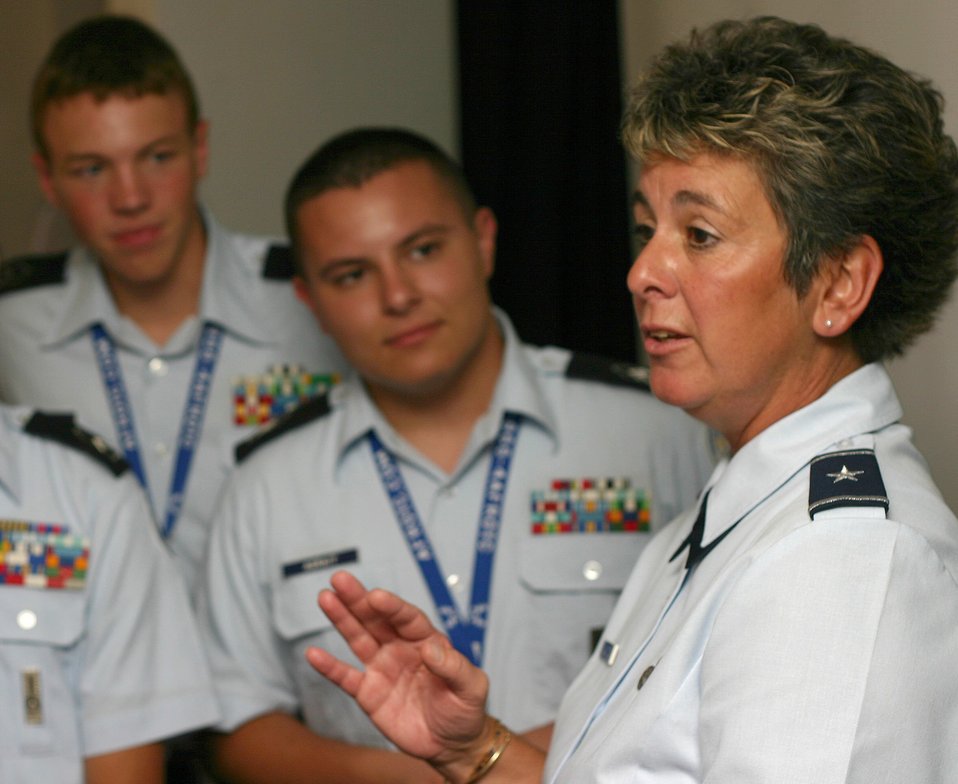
Top Junior ROTC cadets explore Air Force opportunities

Brig. Gen. Anita Gallentine, mobilization assistant to the Air Force Deputy Chief of Staff for Installations and Logistics, talks with Junior ROTC cadets July 30 during a luncheon at the officers club at Kirtland Air Force Base, N.M. General Gallentine, who has served in active-duty, Reserve and Air National Guard positions, shared her experiences with more than 50 high school students participating in the 2008 Air Force Junior ROTC Aerospace and Technology Honor Camp.